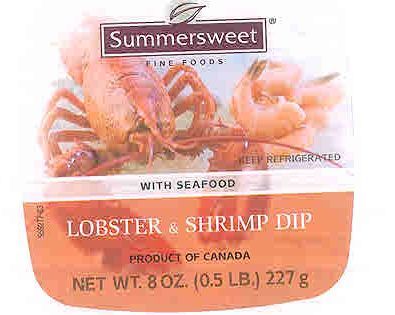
RECALLED - Dip and Mousse

April 15, 2011 - Product Recall - Charcuterie La Tour Eiffel Recalls Mousses and Dips.